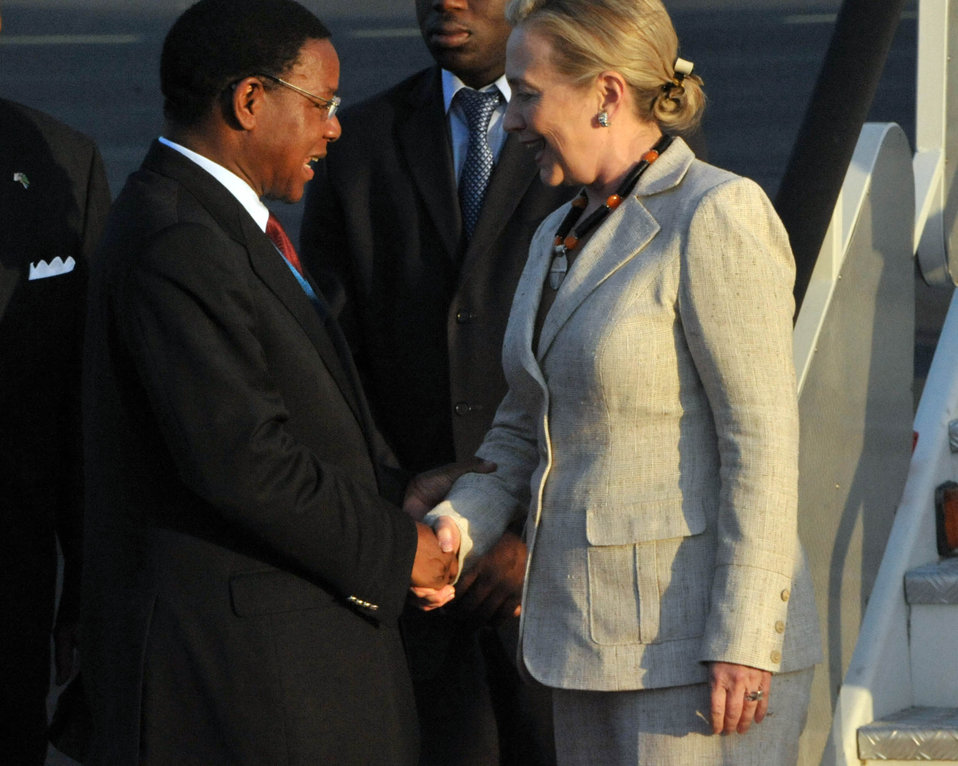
Secretary Clinton Is Greeted By Tanzanian Foreign Minister Membe

U.S Secretary of State Hillary Rodham Clinton is greeted by Tanzanian Foreign Affairs and International Cooperation Minister Bernard Membe upon her arrival at the Julius Nyerere International Airport in Dar es Salaam, Tanzania, on June 11, 2011.